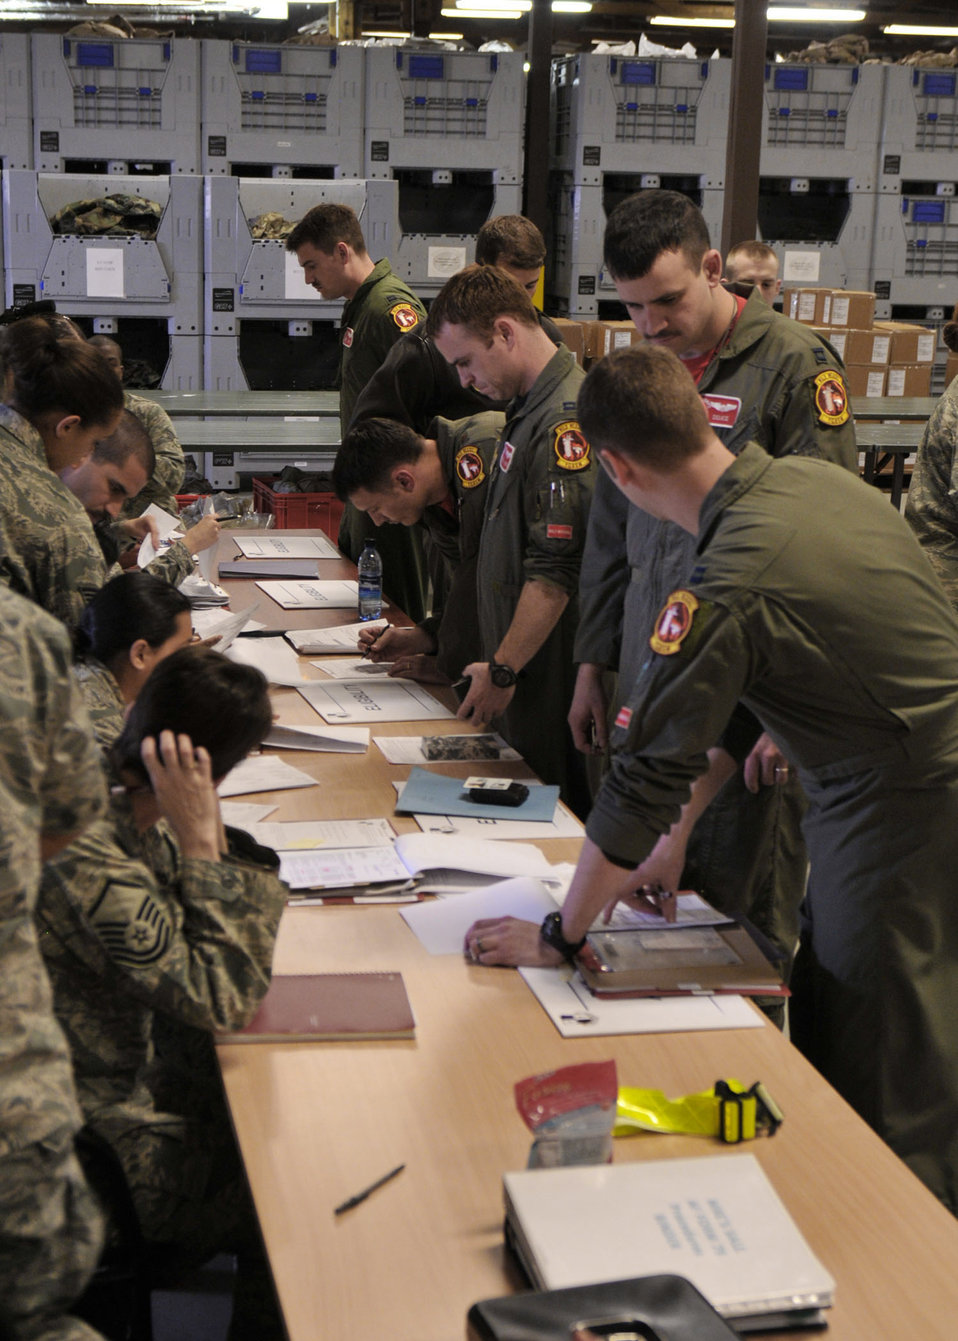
Operation Odyssey Dawn

SPANGDAHLEM AIR BASE, Germany? Pilots from the 480th Fighter Squadron process through the Personnel Deployment Function line in preparation of Operation Odyssey Dawn March 18. Joint Task Force Odyssey Dawn is the U.S. Africa Command task force established to provide operational and tactical command and control of U.S. military forces supporting the international response to the unrest in Libya and enforcement of United Nations Security Council Resolution (UNSCR) 1973. UNSCR 1973 authorizes all necessary measures to protect civilians in Libya under threat of attack by Qadhafi regime forces. JTF Odyssey Dawn is commanded by U.S. Navy Admiral Samuel J. Locklear, III.